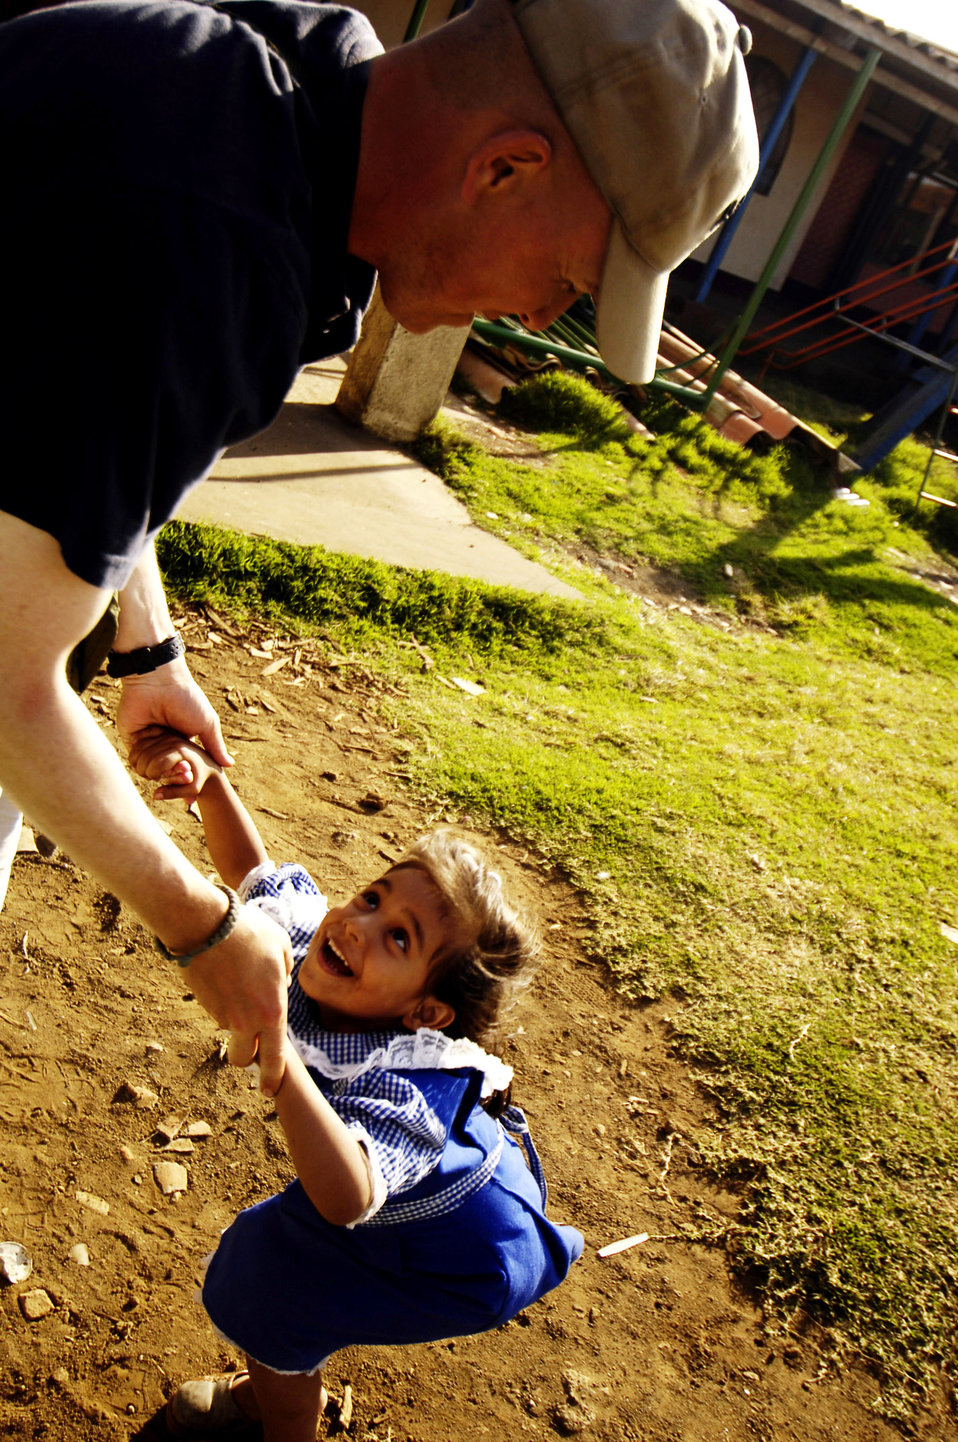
Airmen visit Nicaraguan orphanages, deliver donations

Master Sgt. Claude Weidow plays with an orphan girl at Siervas del Divino Rostro orphanage April 7 in Santa Teresa, Nicaragua. He and 35 other Camp RED HORSE members delivered more than $500, more than 80 books and more than 100 toys to the children at that orphanage and the ABC Feed the Children orphanage in Santa Teresa. Sergeant Weidow is a Camp RED HORSE member.